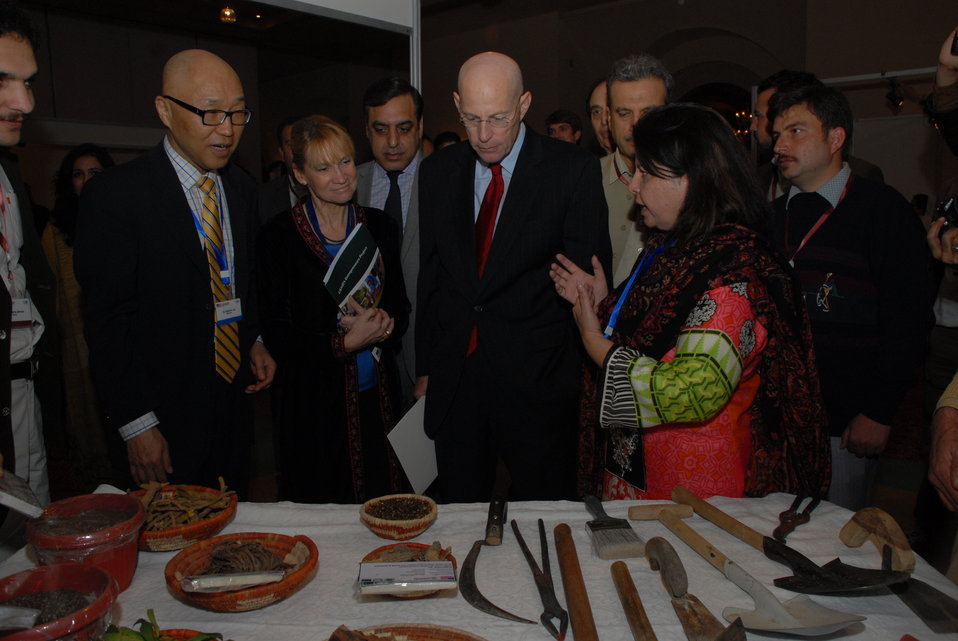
The United States Helps Revitalize Medicinal Plants and Honey Industry in Khyber Pakhtunkhwa 02

The United States, through the U.S. Agency for International Development’s (USAID) Entrepreneurs Project, has trained 24,000 small business owners in the field of medicinal plants and honey. The Medicinal and Aromatic Plants and Honey Industry conference on February 3 featured discussions aimed at developing the medicinal plant and honey sector in Pakistan. Plant collectors and bee-keepers discussed business opportunities with buyers and service providers.